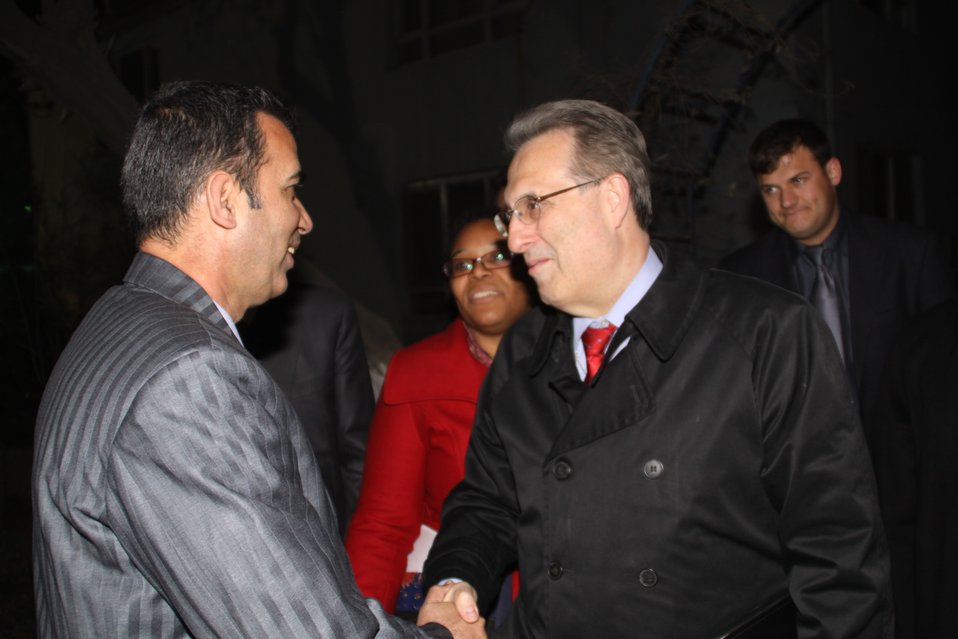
U.S. Ambassador E. Anthony Wayne